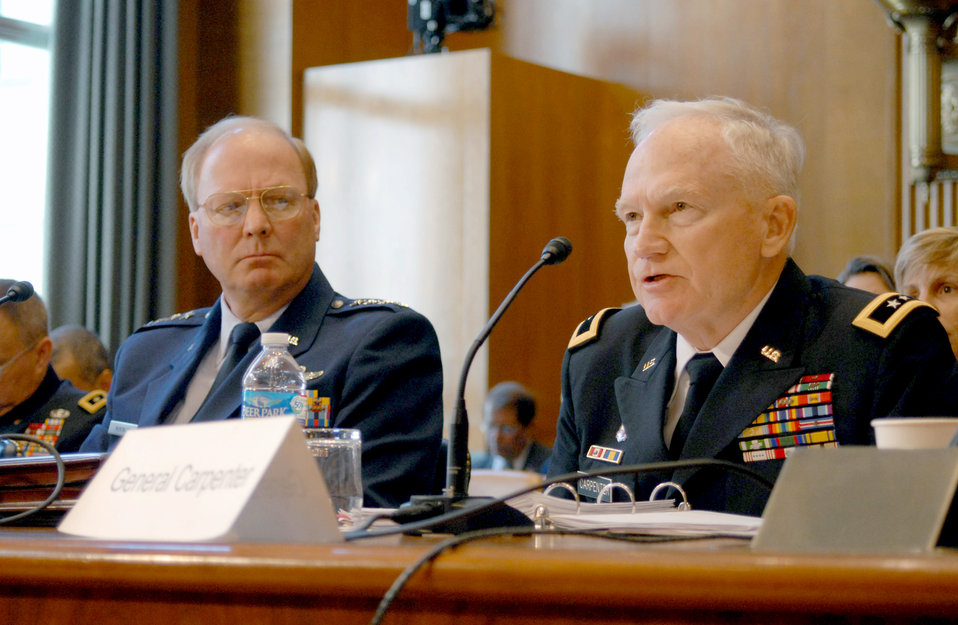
National Guard leaders talk fiscal constraints, cost-effective solutions

Army Maj. Gen. Raymond Carpenter, the acting director of the Army National Guard, talks about the Army Guard as an operational force during a Senate Appropriations Committee hearing May 11, 2011, in Washington D.C.. Air Force Gen. Craig McKinley (left), the chief of the National Guard Bureau, and Air Force Lt. Gen. Harry Wyatt, the director of the Air National Guard, also talked about how far the Air Guard and the National Guard have come since 9/11.